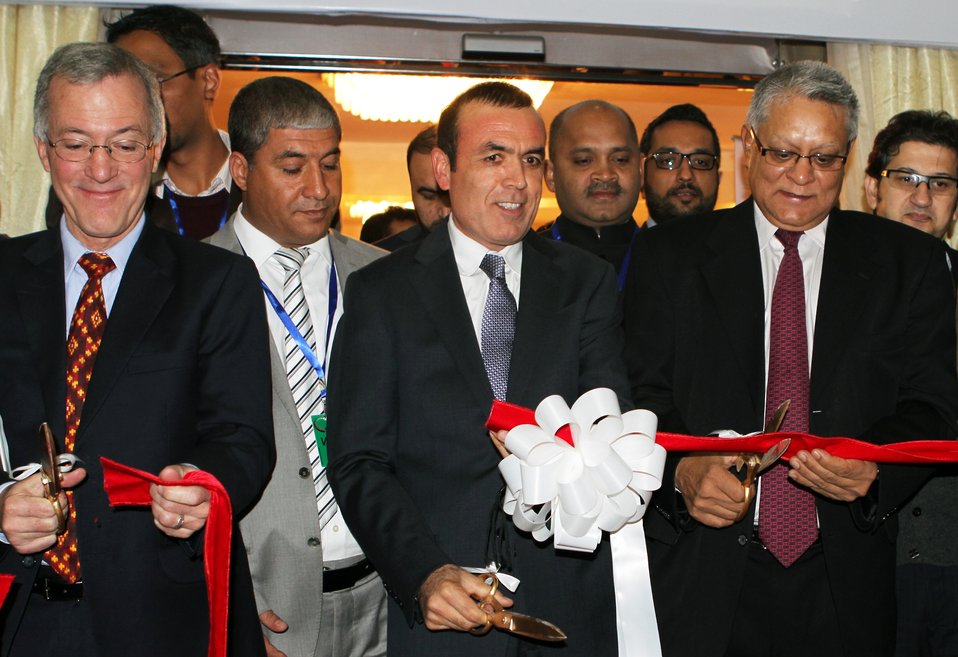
Opening ceremony of India-Afghanistan Innovation Partnership Fair in Kabul.

(L-R) USAID Mission Director William Hammink, Chairman of Kabul Chamber of Commerce and Industry (KCCI) Haji Mail Agha Khairkhwa and Indian Ambassador to Afghanistan Amar Sinha cut the ribbon at the opening ceremony of India-Afghanistan Innovation Partnership Fair in Kabul.